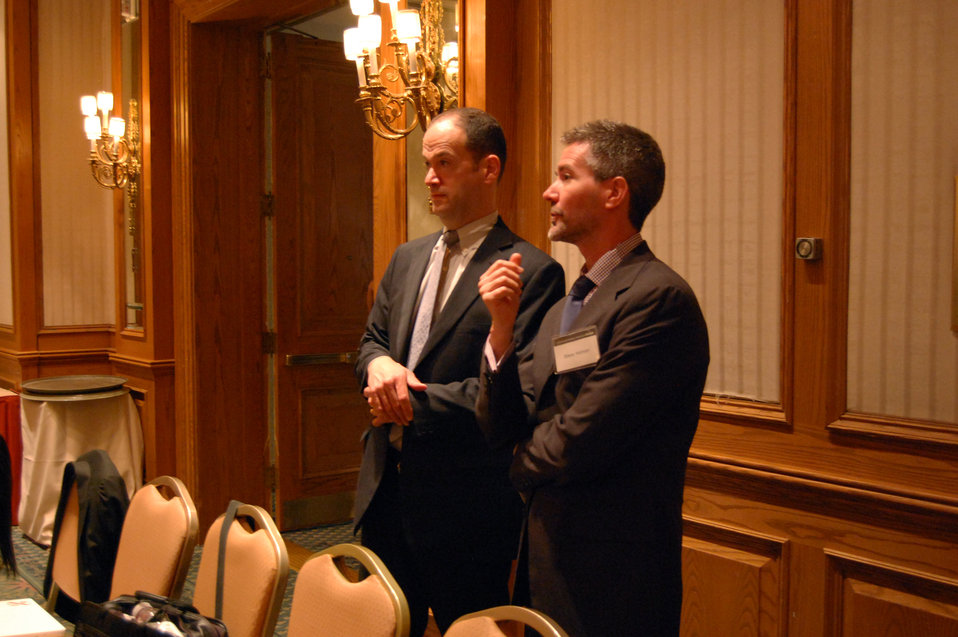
PACHA conf019